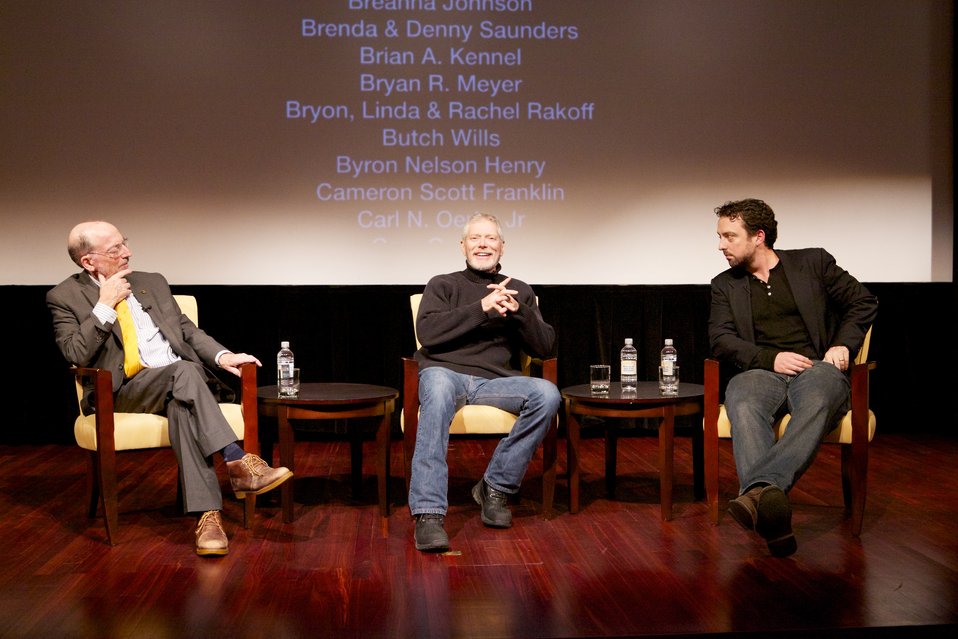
The Gettysburg Story and The Wheatfiled; Jake Boritt (right), filmmaker, Stephen Lang (middle), actor and playwright, and Gabor S. Borit (left), Lincoln and Civil War era scholar, discuss and answer questions about the films The Wheatfield and The Gettysburg Story